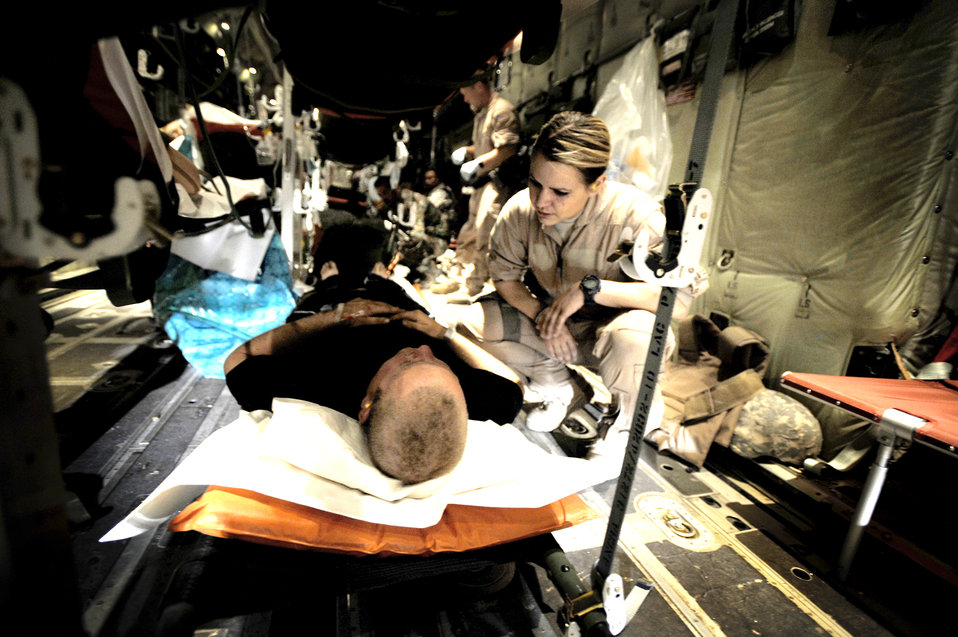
Flying hospital staff gives wounded fighting chance

Senior Airman Libby See cares for a patient during an aeromedical evacuation mission to Bagram Airfield, Afghanistan. Airman Libby is an aeromedical technician with the 451st Expeditionary Aeromedical Evacuation Flight at Kandahar Airfield, Afghanistan.